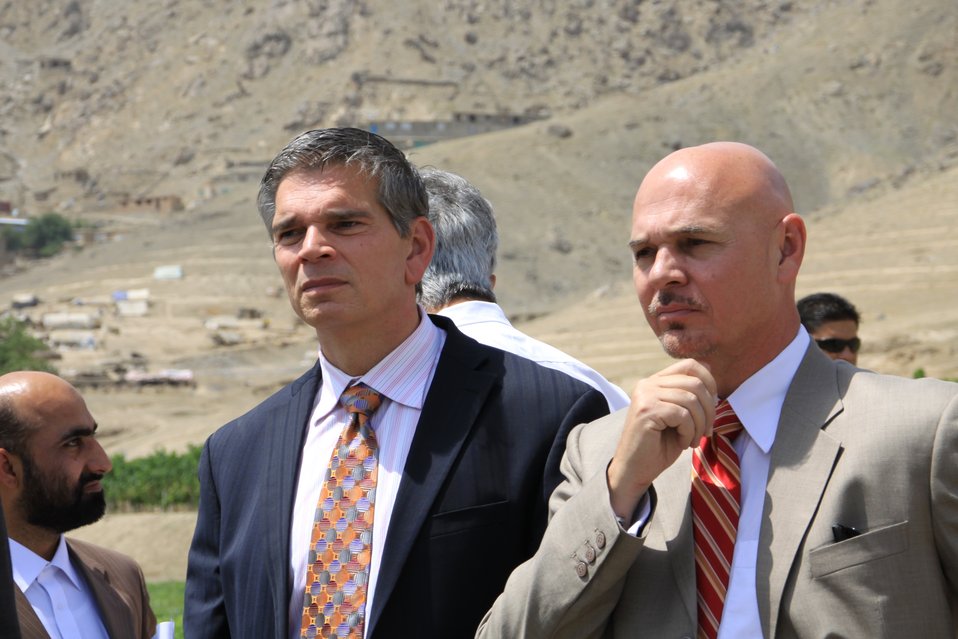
Badam Bagh Farm